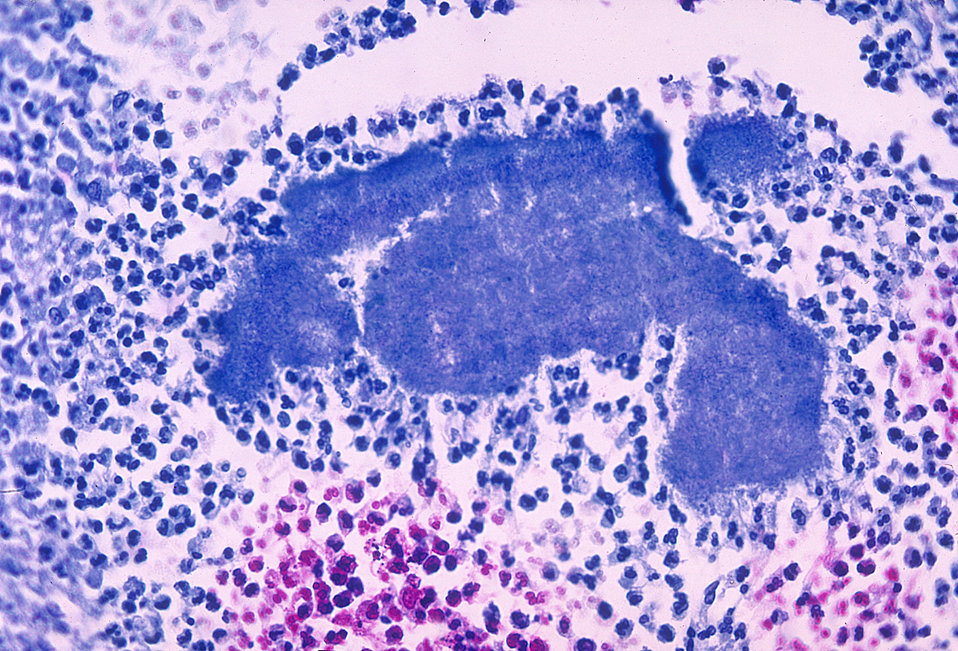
This micrograph depicts histopathologic changes due to the gram-positive organism, Actinomyces israelii.